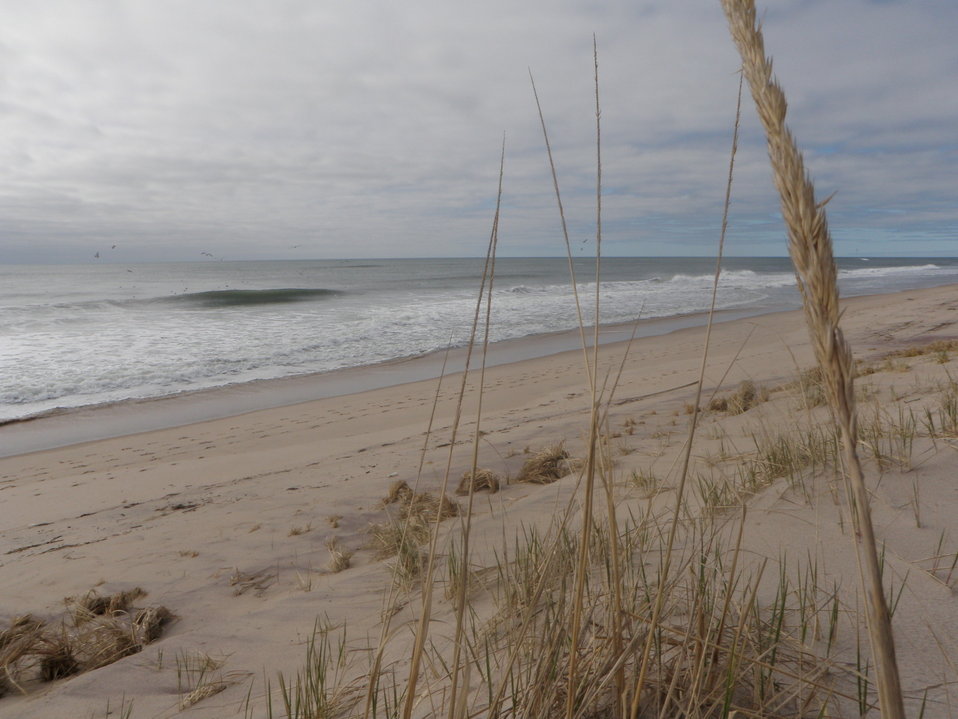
Beach at Amagansett

Amagansett National Wildlife Refuge.